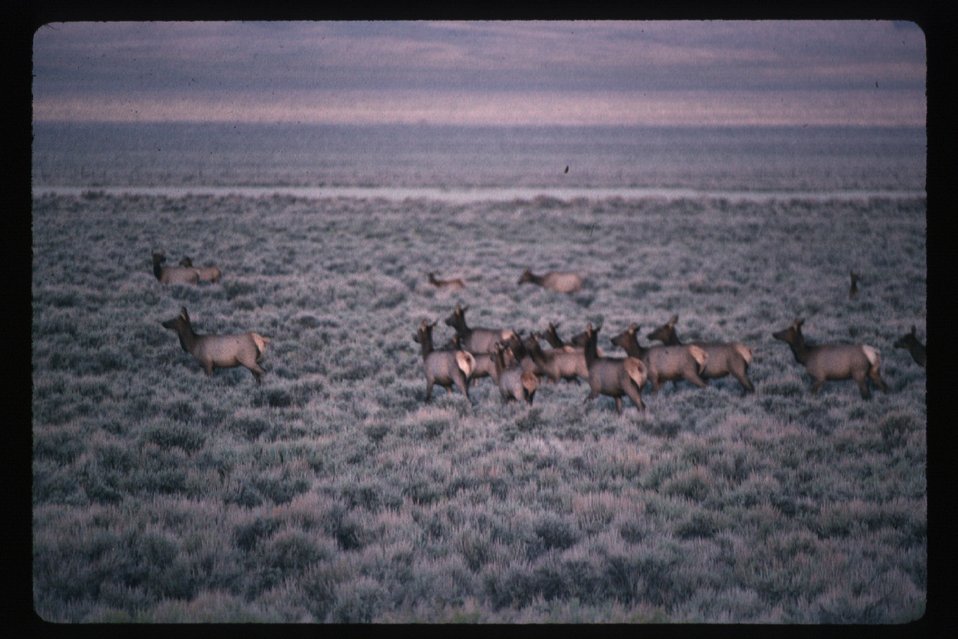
Elk Wildlife LSRD Lower Snake River District